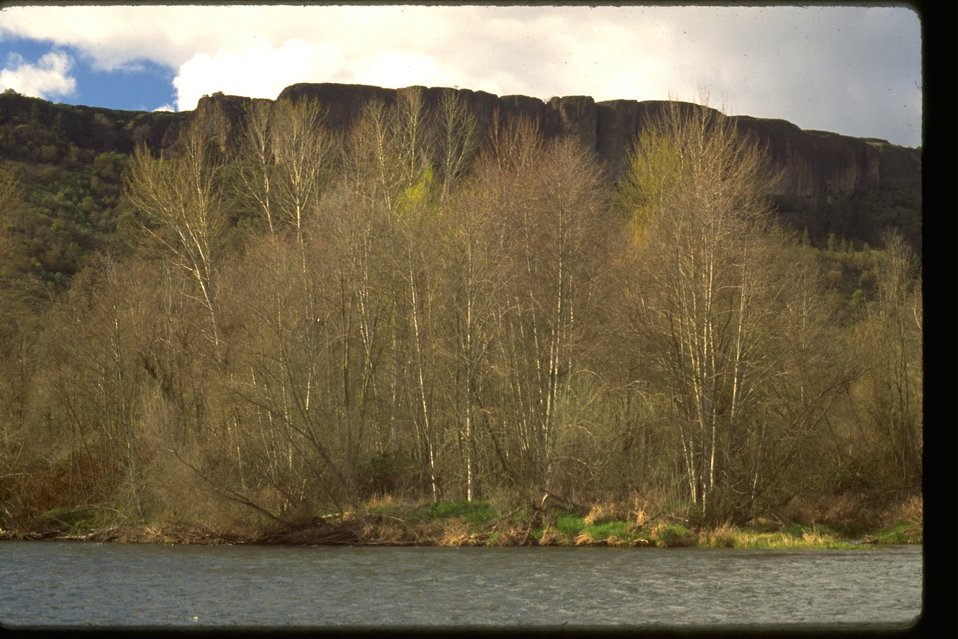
A group of trees along the river bank of the Rogue River at Lower Table Rock.